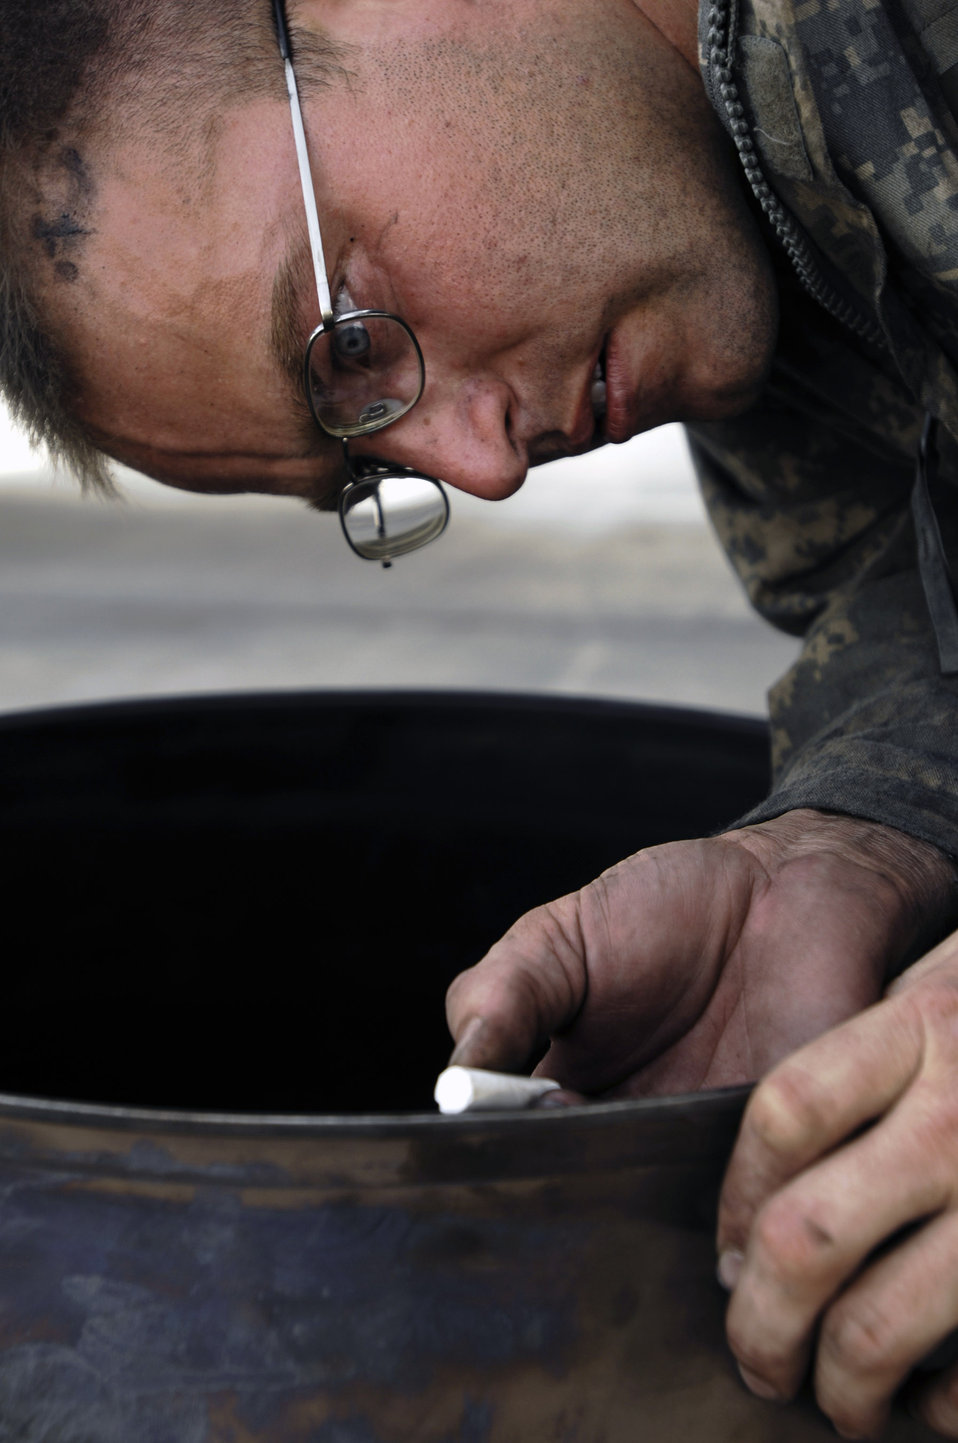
An ounce of prevention

Staff Sgt. Robert Crow marks a crack found on the rear bearing support of a C-130 Hercules engine during a post-flight inspection Aug. 22 at Joint Base Balad, Iraq. Sergeant Crow is an aerospace propulsion technician with the 777th Expeditionary Aircraft Maintenance Squadron deployed from Little Rock Air Force Base, Ark. His hometown is Fort Worth, Texas.